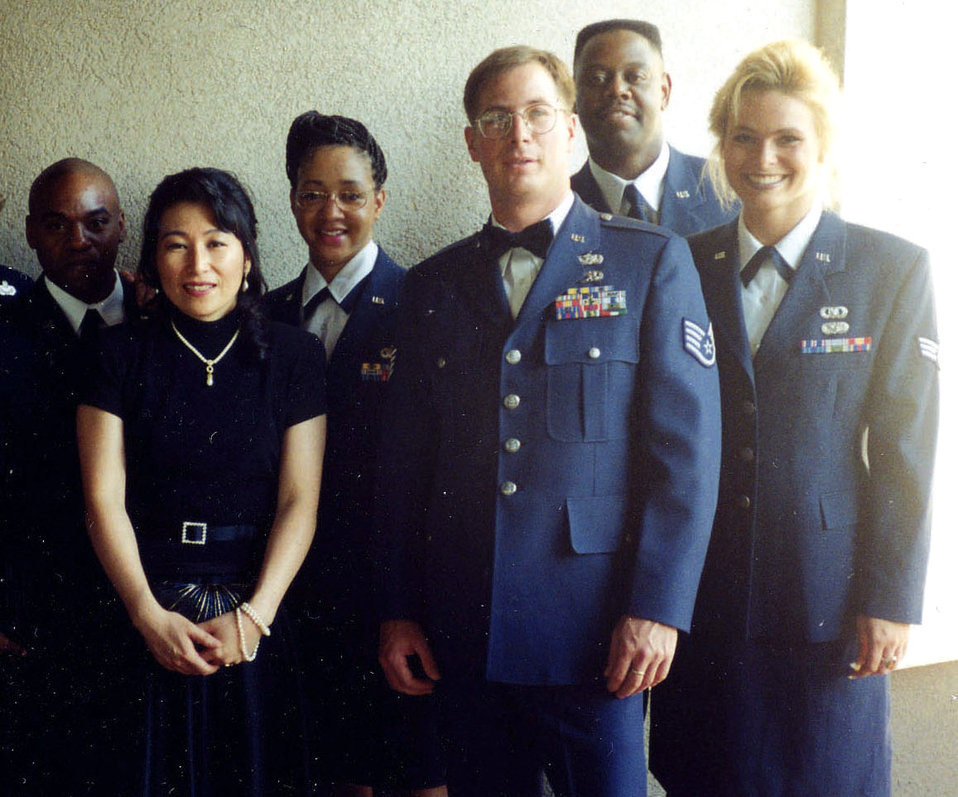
Airman remembers day she lost four friends

RAMSTEIN AIR BASE, Germany -- (From left) Tech. Sgt. Jeffrey Jackson and wife, Hiroko, then-Staff Sgt. Theresa Hall, Staff Sgt. Kevin Sullivan, Tech. Sgt. Terry Jennings and Senior Airman Angela Fralick pose for a photo at a noncommissioned officer academy graduation ceremony July 11, 1997. Mrs. Jackson, Sergeant Sullivan, Sergeant Jennings and Airman Fralick died in a head-on collision with a drunk driver on their way home from the graduation.